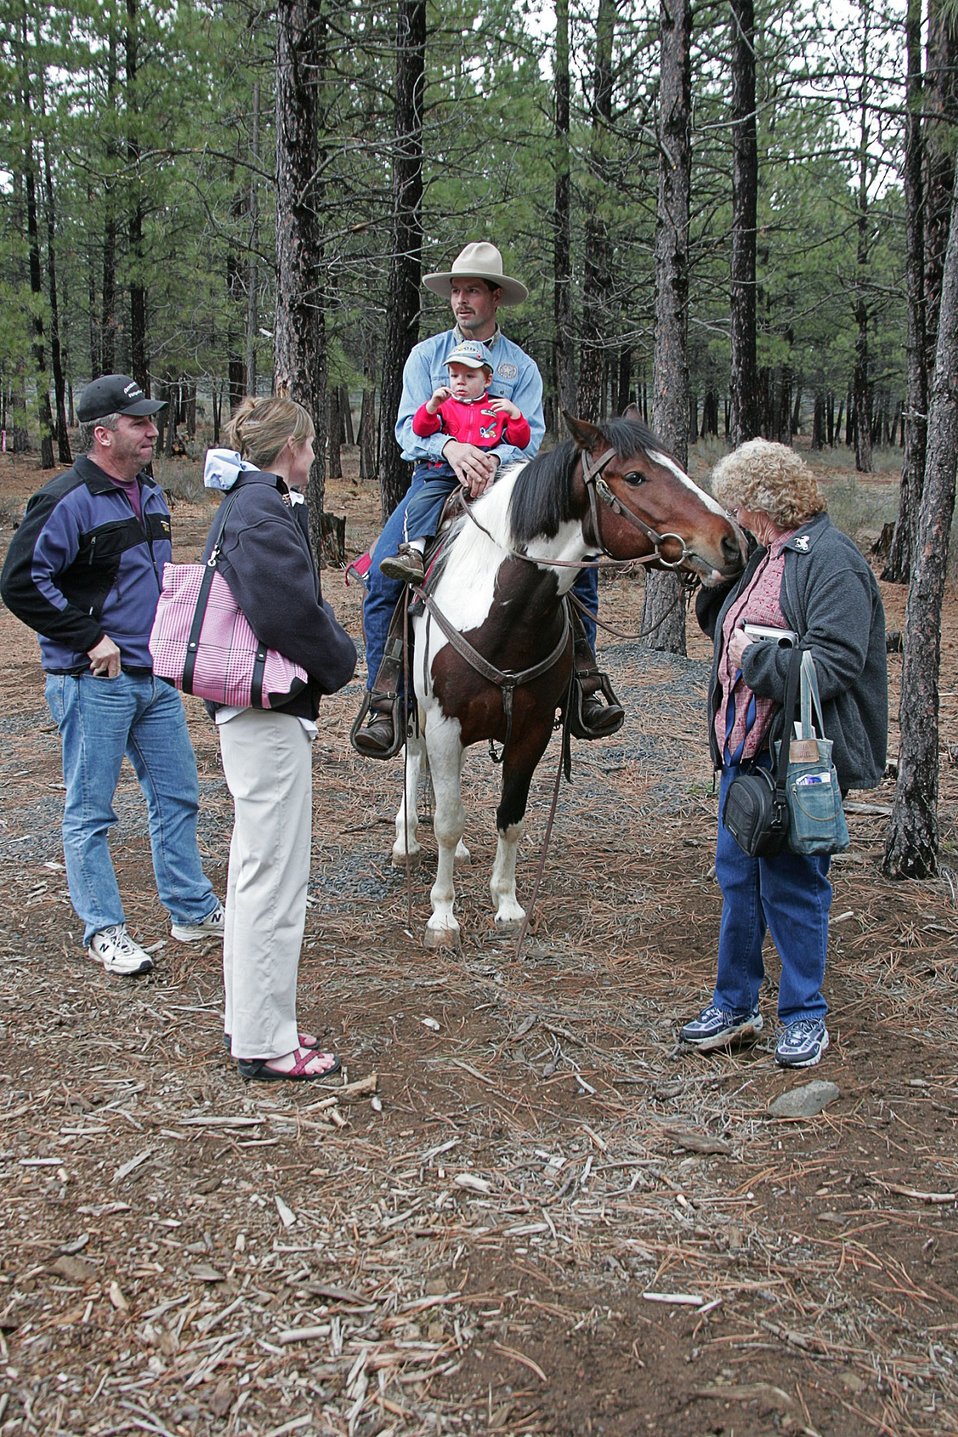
Horse Trainer, Rick Lauman and his son sit on Sage as potential adopters ask questions about wild horses.